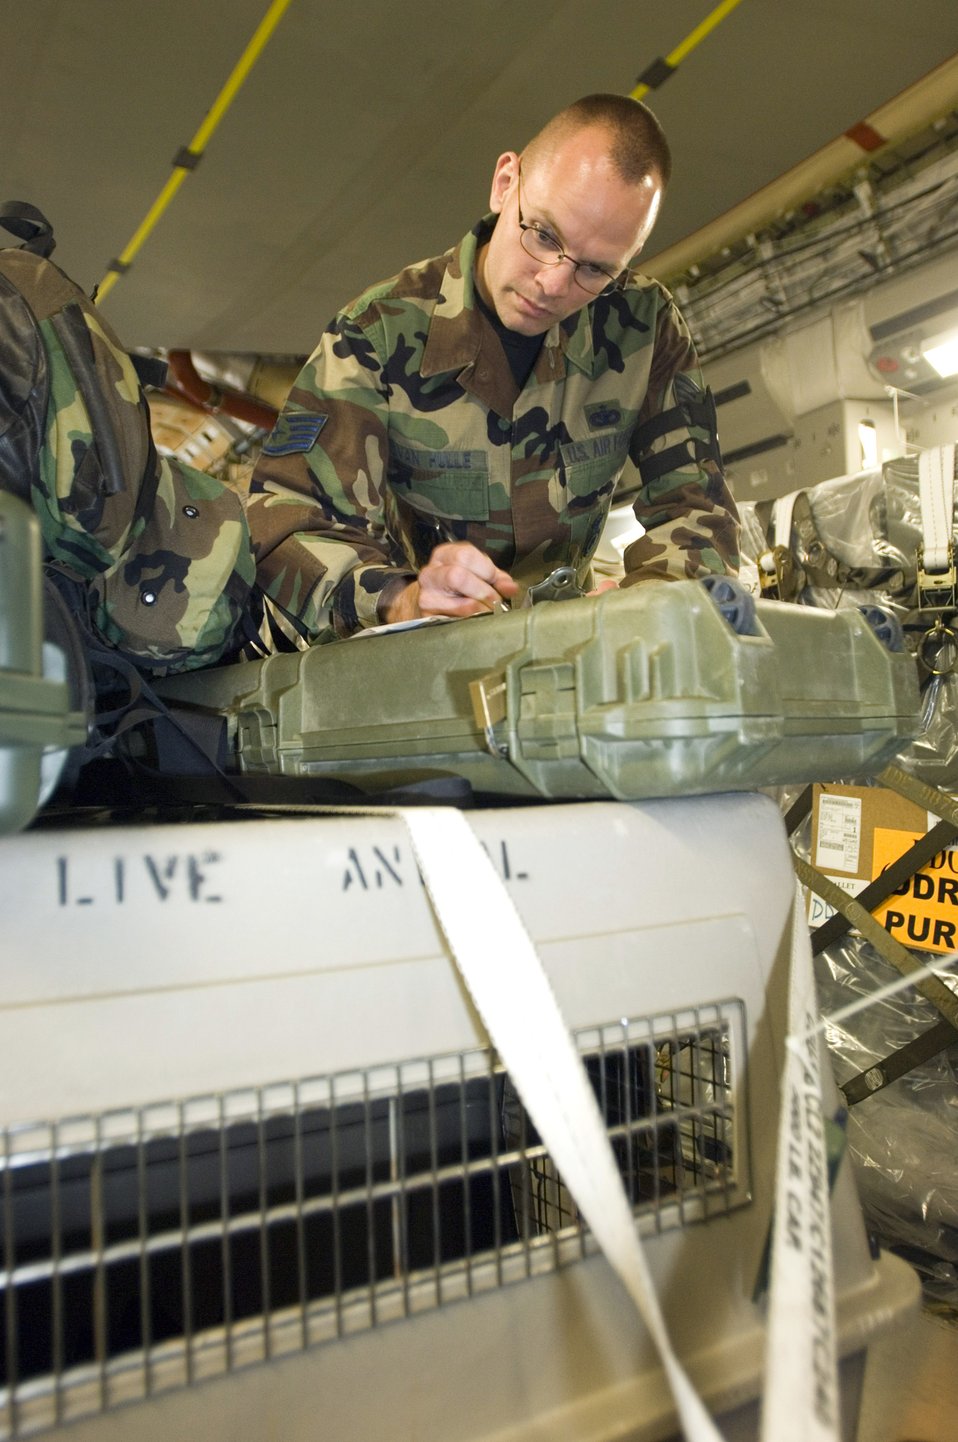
Sergeant's job is for the dogs

Staff Sgt. Robert Van Hulle copies information about a military working dog that arrived at Ramstein Air Base, Germany, on Tuesday, May 9, 2006. Sergeant Van Hulle is the 435th Security Forces Squadron military dog handler liaison. He finds lodging for K-9 teams, sets up veterinary appointments and makes flight arrangements for the K-9 teams transiting the base.